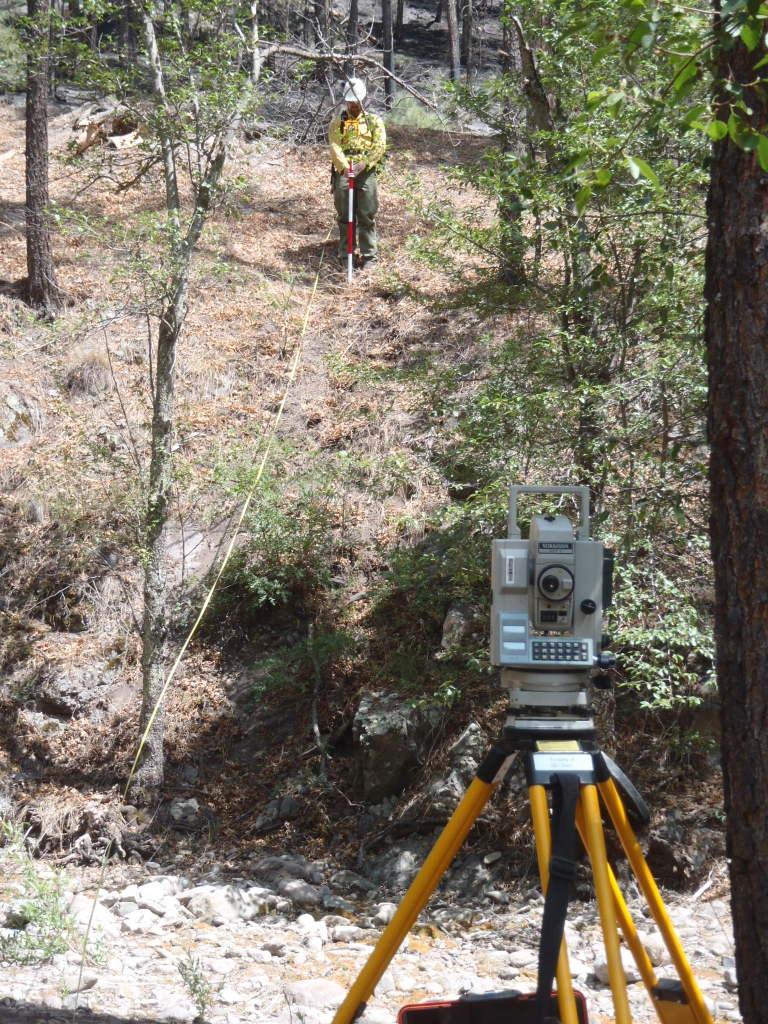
Burned Area Emergency Response (BAER) team hydrologist measures a cross section of Gallinas Creek in Gila National Forest near Kingston, NM. The Silver Post Fire response has the Burned Area Emergency Response (BAER) team beginning operations to seed acres of high burn severity and to mulch additional acres. Seeding reduces effects to downstream life, property, and infrastructure by reducing erosion and runoff. Areas of high burn severity are to be seeded with a quick germinating, non-persistent annual cereal barley that would provide rapid ground cover. A small percentage of native perennial species would also be included to give the burned area a jump start in natural recovery, and provide for long-term ground cover. Mulch is the most effective treatment for controlling erosion and runoff, as it provides immediate ground cover. Mulch also assists in stabilizing soil in and around these areas.